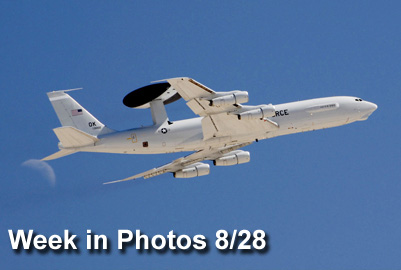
Week in Photos 8/28

Air Force Week in Photos for Aug. 28 highlights photos from around the Air Force. In this photo by Senior Master Sgt. Robert J. Sabonis, an E-3 Sentry AWACS aircraft takes off Aug. 25 from Nellis Air Force Base, Nev., while participating in Red Flag.